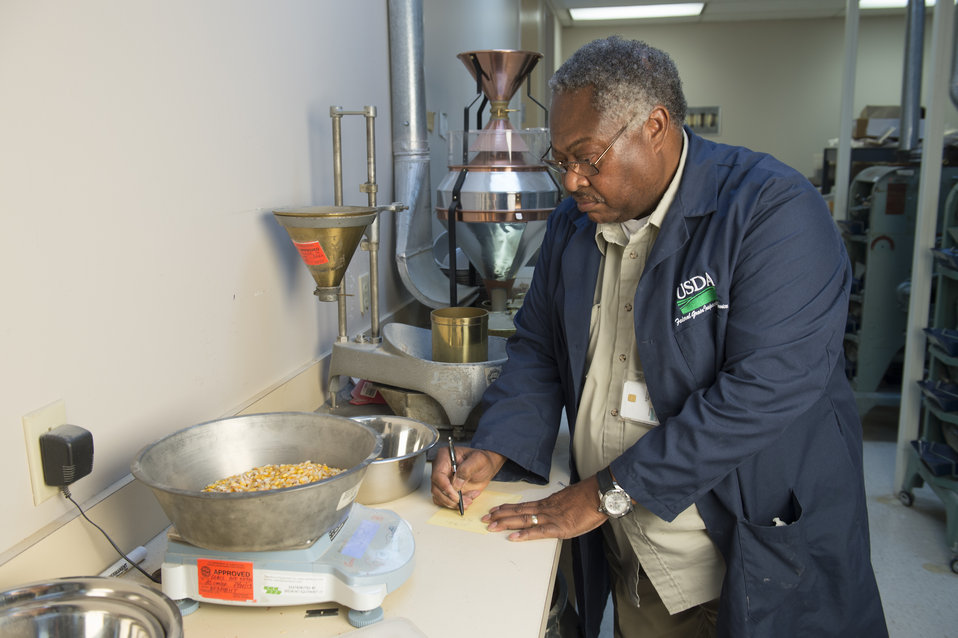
A U.S. Department of Agriculture (USDA) Grain Inspection, Packers and Stockyards Administration (GIPSA) Federal Grain Inspection Service (FGIS) scientist tests corn at the FGIS inspection laboratory in New Orleans, LA on Monday, Nov. 18, 2013.